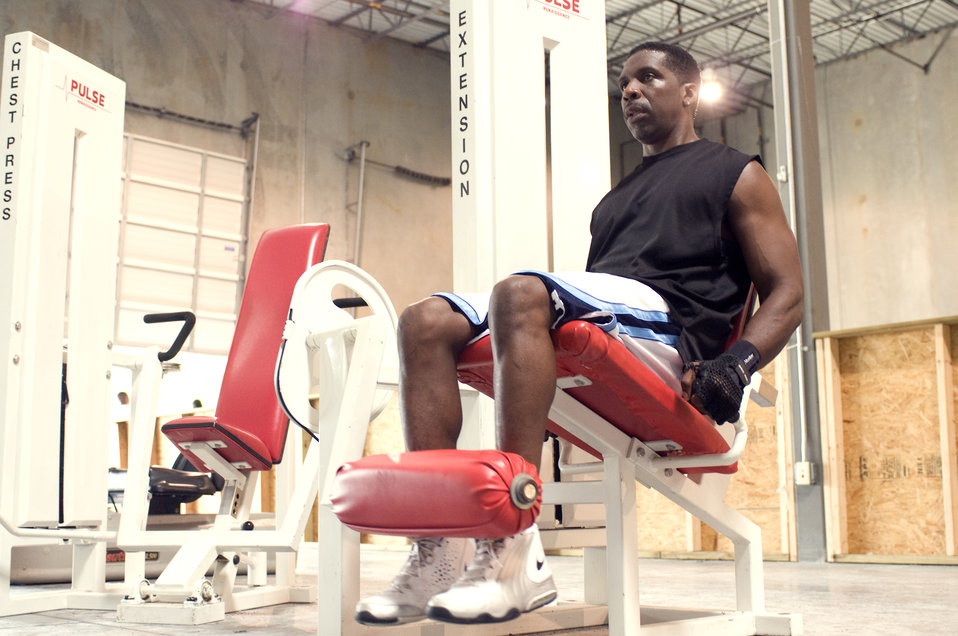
The man pictured here from a lower-left anterior-oblique view, was inside a gymnasium performing various strength-training exercises. At this point in his exercise routine, he was performing leg extensions on a Pulse� Leg Extension machine. His legs were fully flexed, with his ankles cradling the cushioned, moveable and weighted segment of the machine. To begin each repetition, from this position, the legs are slowly brought up to the fully-extended position, and held there for a few seconds, then slowly allowed to return to this flexed position, with the lower legs draped over the edge of the seat. Hopefully, he was also keeping well hydrated during his exercise regimen by drinking fresh water during his workout.